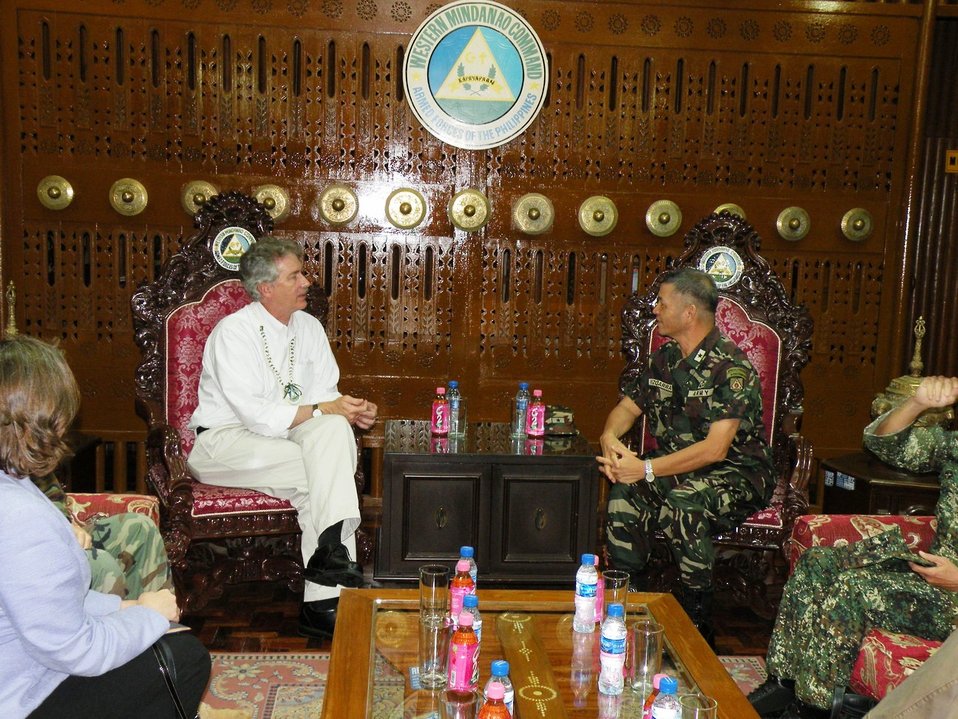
Under Secretary Burns Speaks With Philippine Western Mindanao Deputy Commander BG Jose Vizcarra

U.S. Under Secretary William J. Burns speaks with Philippine Western Mindanao Deputy Commander BG Jose Vizcarra in Cotabato, Mindanao, Philippines, on July 21, 2010.